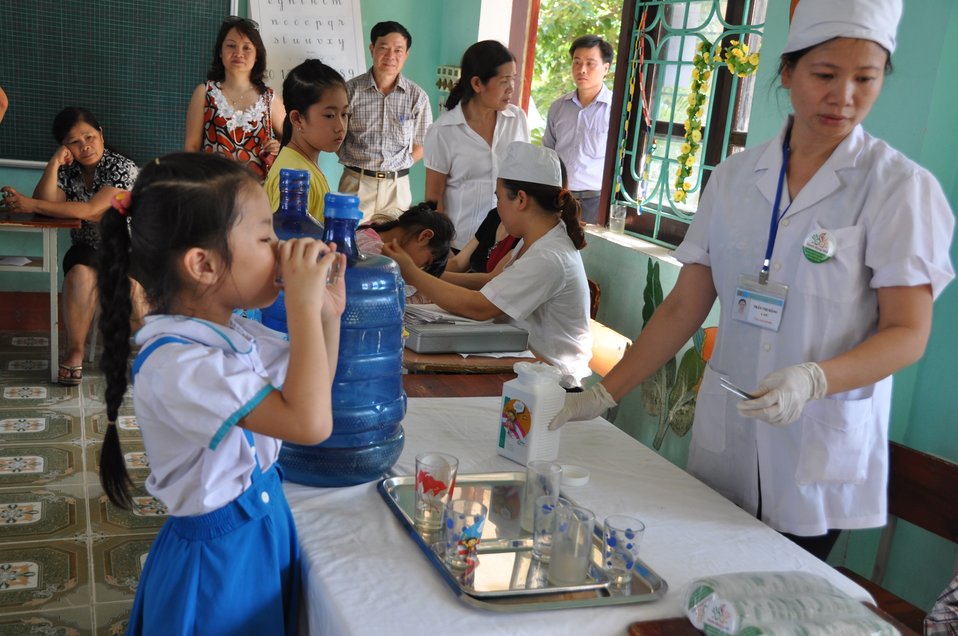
USAID supports deworming education and medication distribution in Bac Giang Province

May 20, 2013